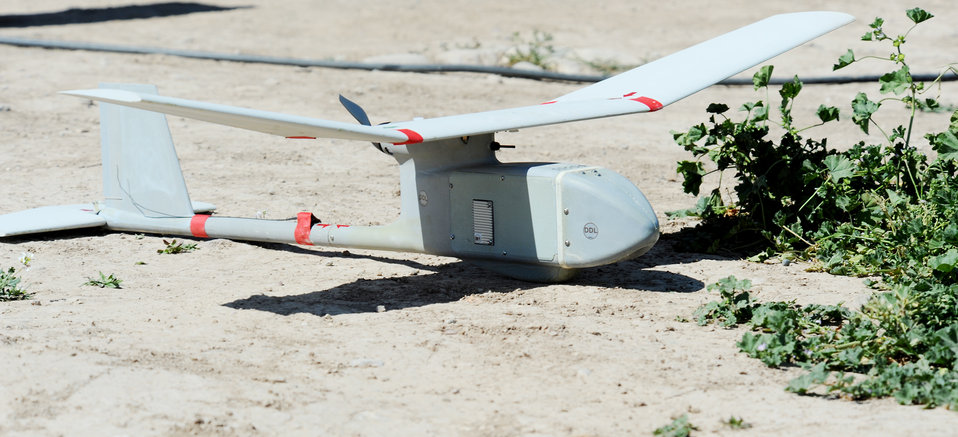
RQ-11B Raven

An RQ-11B Raven unmanned aerial vehicle rests on the ground after a fly-by conducted by members of the 506th Expeditionary Security Forces Raven team at Kirkuk Regional Air Base, Iraq, March 23, 2010. The Raven is remotely piloted by a mission operator and vehicle operator who work side by side to coordinate on what they are seeing and what direction the device is flying.